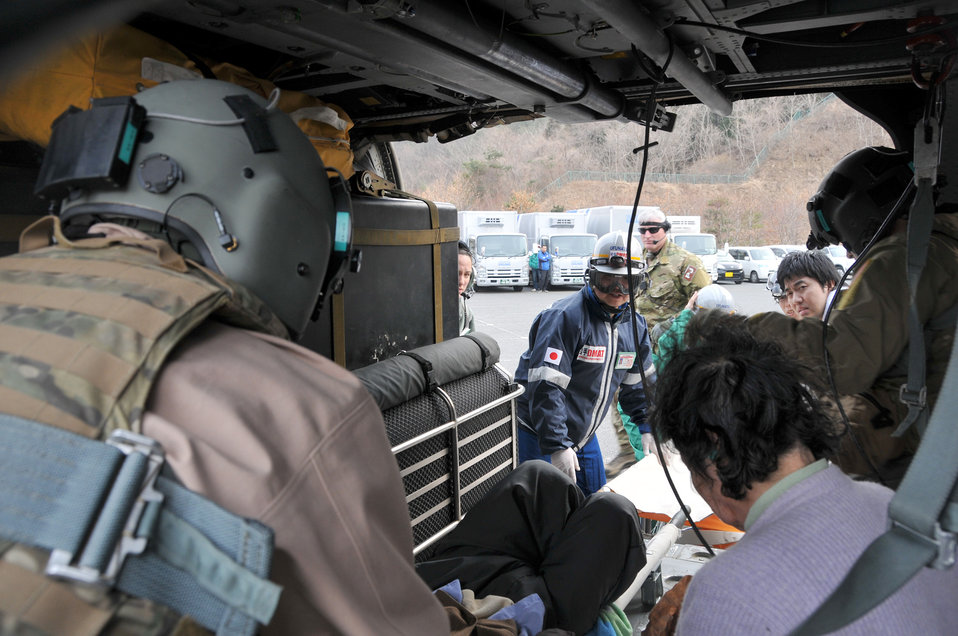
Search and rescue

Members of a Japanese disaster medical assistance team off-load an earthquake victim from an HH-60G Pave Hawk helicopter March 14, 2011, at Sendai, Japan. U.S. Air Force search and rescue Airmen transported the injured man from a remote island to a nearby hospital for treatment.